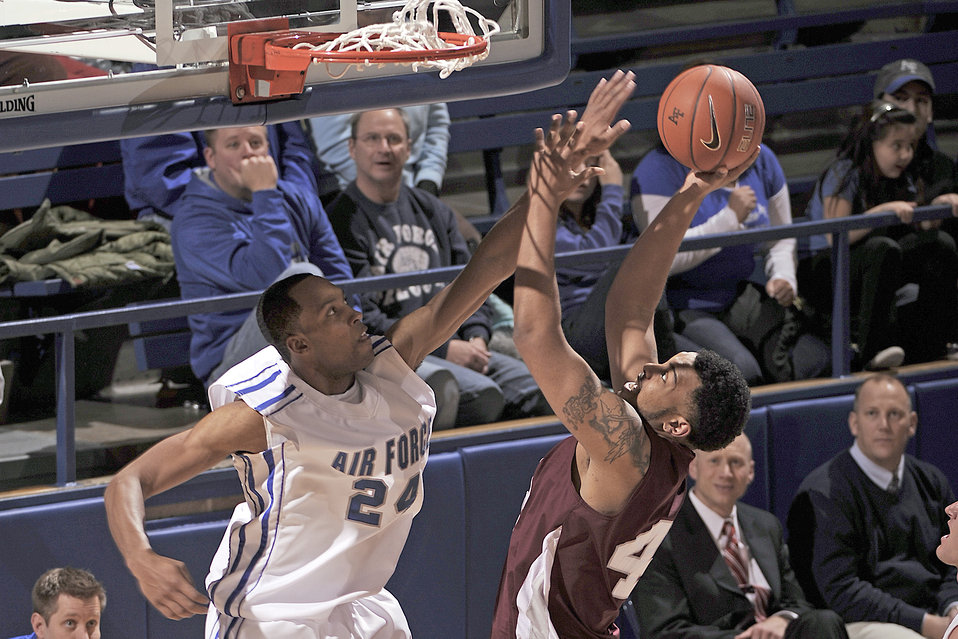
Falcons defeat the Eagles

Falcon forward Derek Brooks attempts a block against the Eagles' Dijon Manns as the Falcons defeat North Carolina Central 73-56, Dec 11, 2010, at Clune Arena in Colorado Springs, Colo. Brooks also tied his career high with seven rebounds.